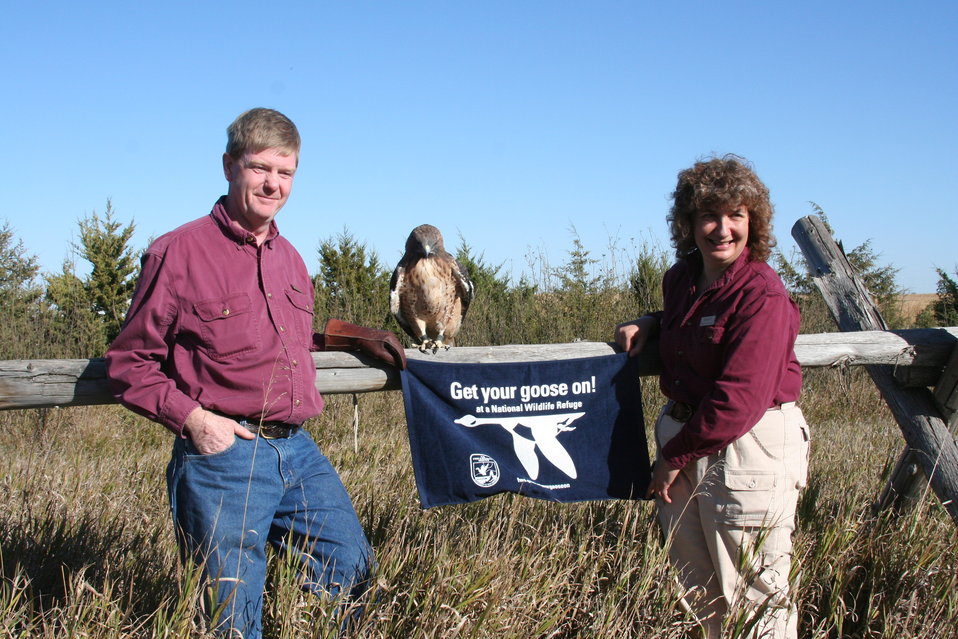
Get Your Goose On! - Raptor Style!

During Huron Wetland Management District's 2012 Prairie Festival, visitors were treated to an up close and personal look at various birds of prey.